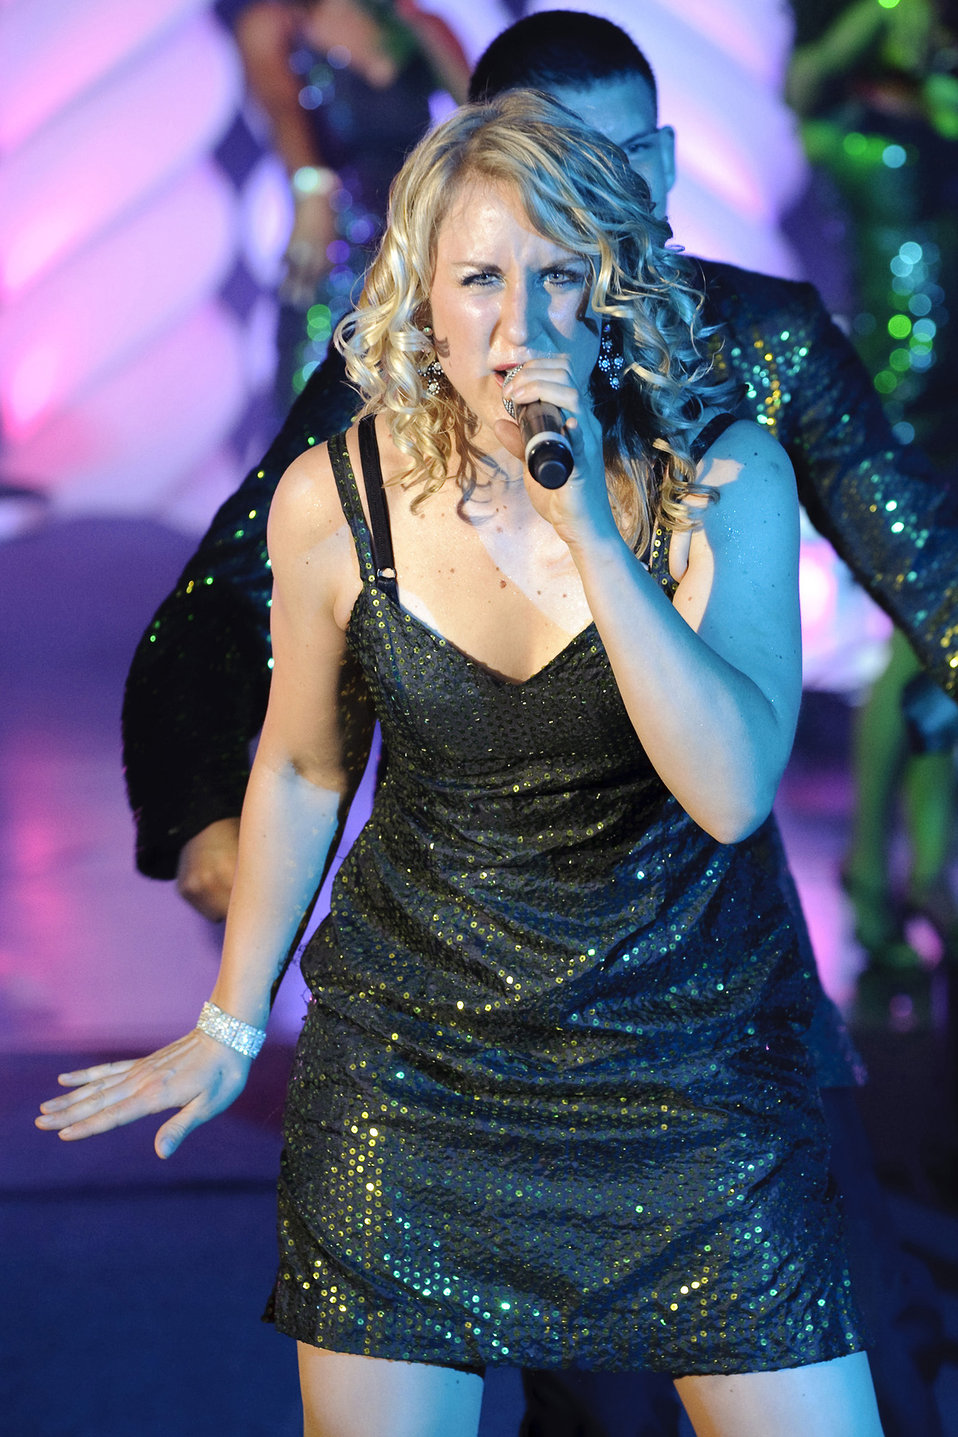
TIB wrap up tour

Airman 1st Class Jamie Horner performs during the final concert of the 2010